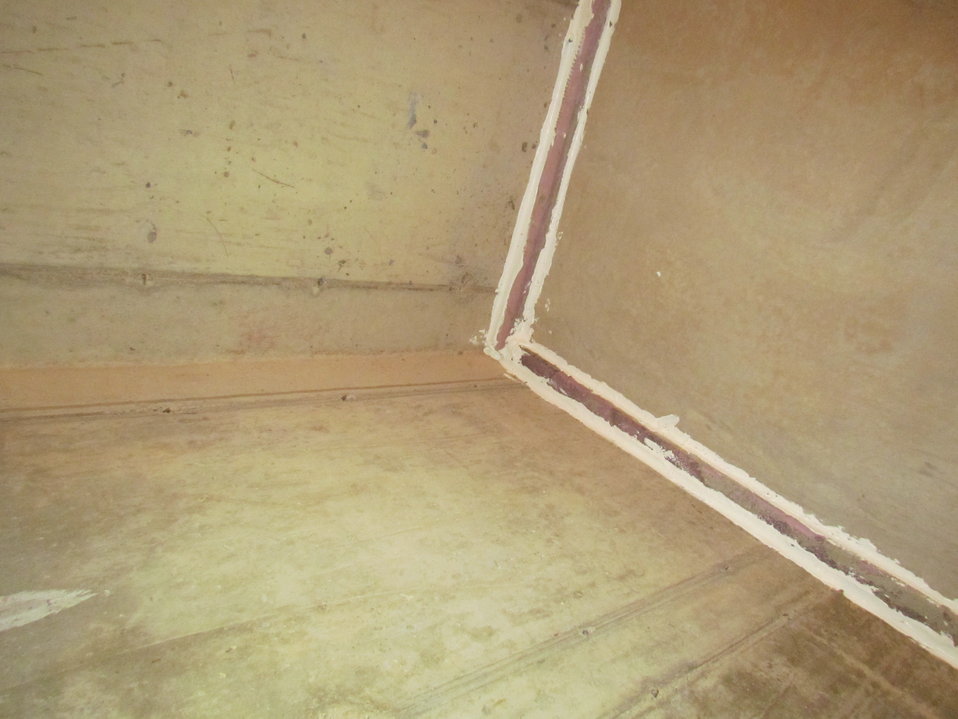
Net-Zero Energy Residential Test Facility - Photo showing sealant at junction of basement walls and floor slab.